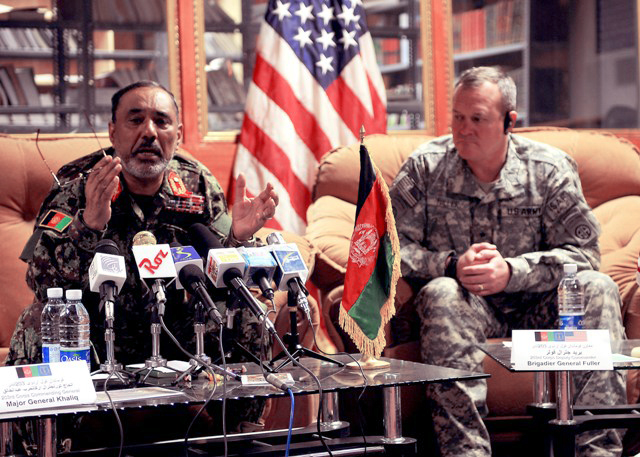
Program empowers Afghan citizens to protect against threat of IED attacks

Afghan Maj. Gen. Abdul Khaliq (left) speaks about the Department of Defense Rewards Program and Operation Jaeza Dec. 7, 2009, during a press conference at Forward Operating Base Thunder, Gardez District in Afghanistan. The Afghan National Army 203rd Corps commander and deputy commander, Army Brig. Gen. Kurt Fuller (right) shared details on local and national news programs about the monetary rewards program to gain actionable information or non-lethal assistance from citizens to disrupt or defeat enemy activities, particularly the use of improvised explosive devices. General Fuller also serves as the Combined Joint Task Force-82 deputy commander.